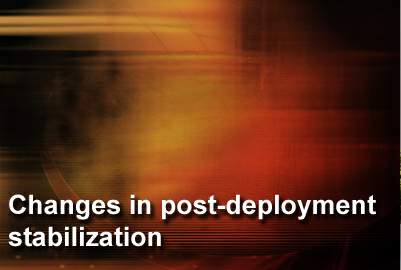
Changes in post-deployment stabilization

The release of the new Assignment Air Force Instruction eliminates the disparity between the short tour PCS and a 365-day deployment.